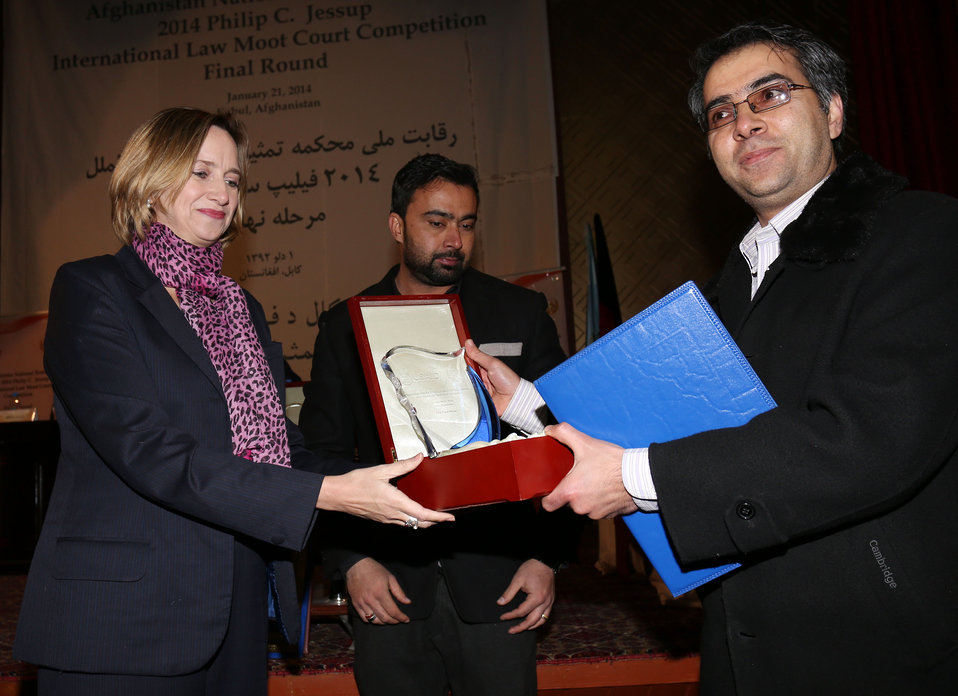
International Law Moot Court Competition 2014